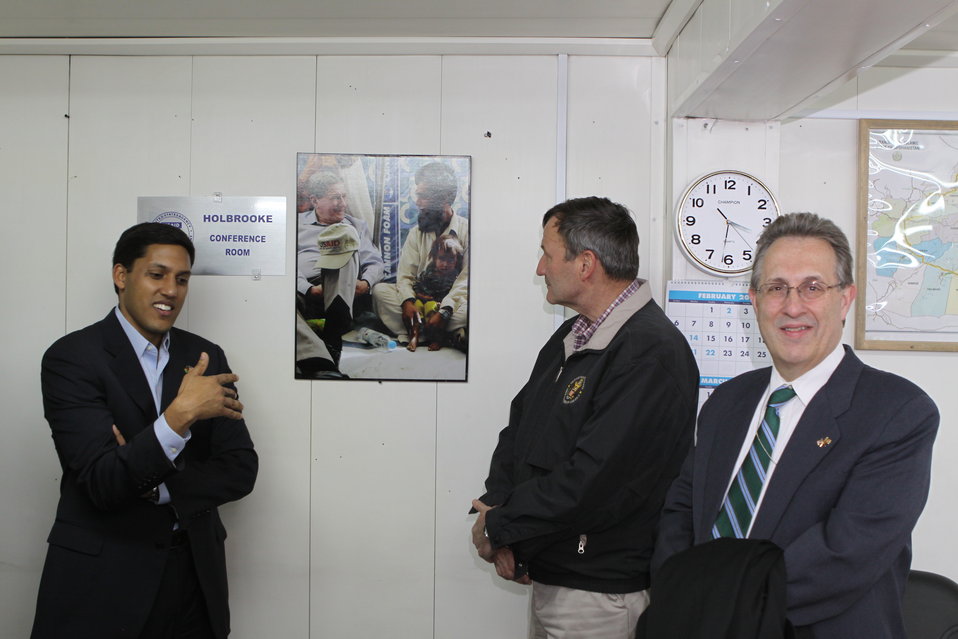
Administrator Shah, Ambassador Eikenberry, and Ambassador Wayne